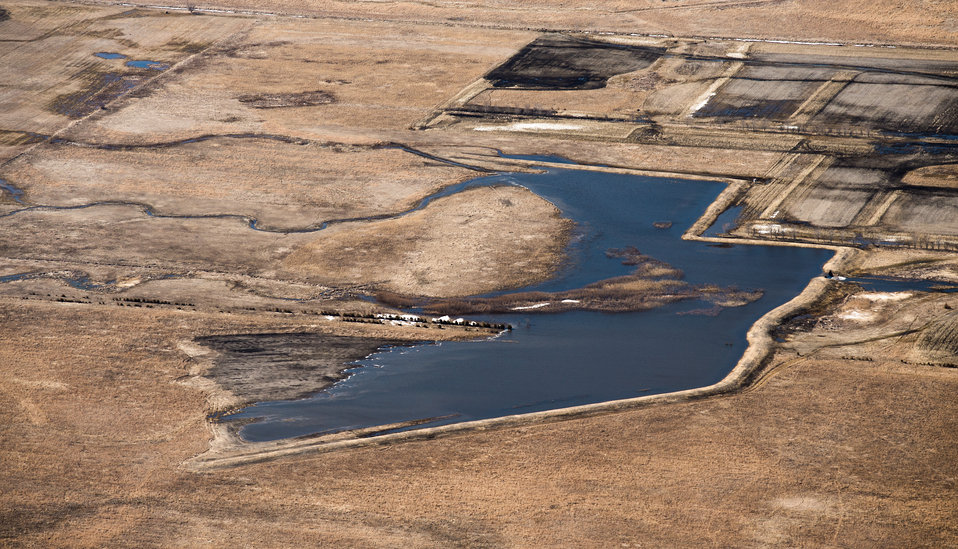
Ehlert North U.S. Department of Agriculture (USDA) Natural Resources Conservation Service (NRCS) Wetland Reserve Program (WRP) in Wilkin County, MN, on Tuesday, April 30, 2013. For information about this and other programs from the USDA Red River Basin Initiative (RRBI) please see www.mn.nrcs.usda.gov/news/features13/RRBI.html.